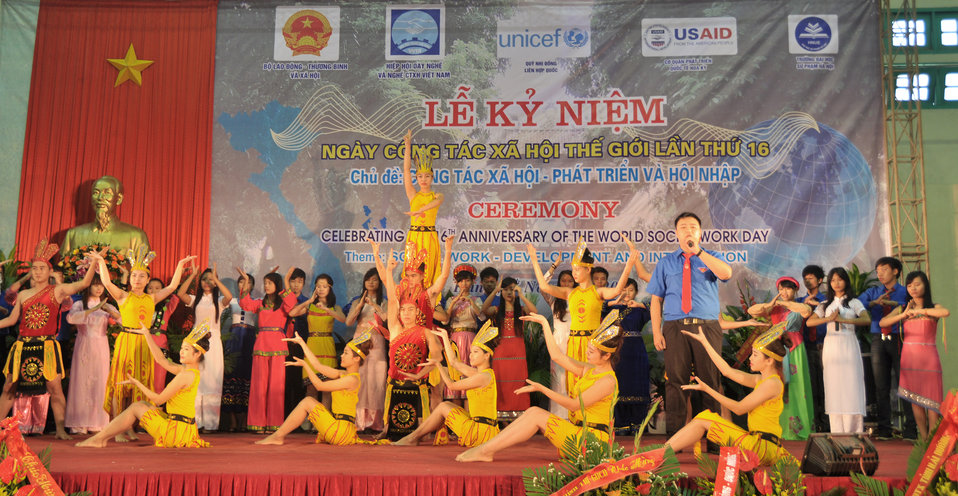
16th Anniversary of the World Social Work Day in Hanoi

Hanoi, November 8, 2013.